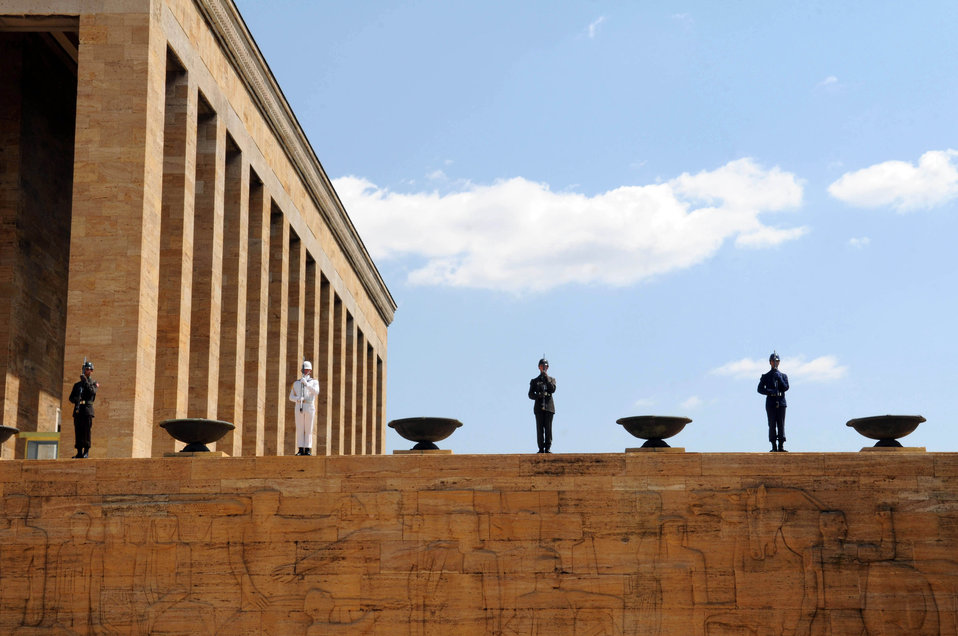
CSAF visits Turkey

Turkish servicemembers stand guard and overlook Anitkabir, a memorial and mausoleum in Ankara, Turkey, honoring Mustafa Kemal Ataturk, the founder of the Republic of Turkey. During a visit to the memorial July 19, 2010, Air Force Chief of Staff Gen. Norton Schwartz and his wife Suzie participated in a wreath-laying ceremony along with Airmen stationed in Ankara. The ceremony was the first event during General Schwartz's multi-day visit to Turkey.